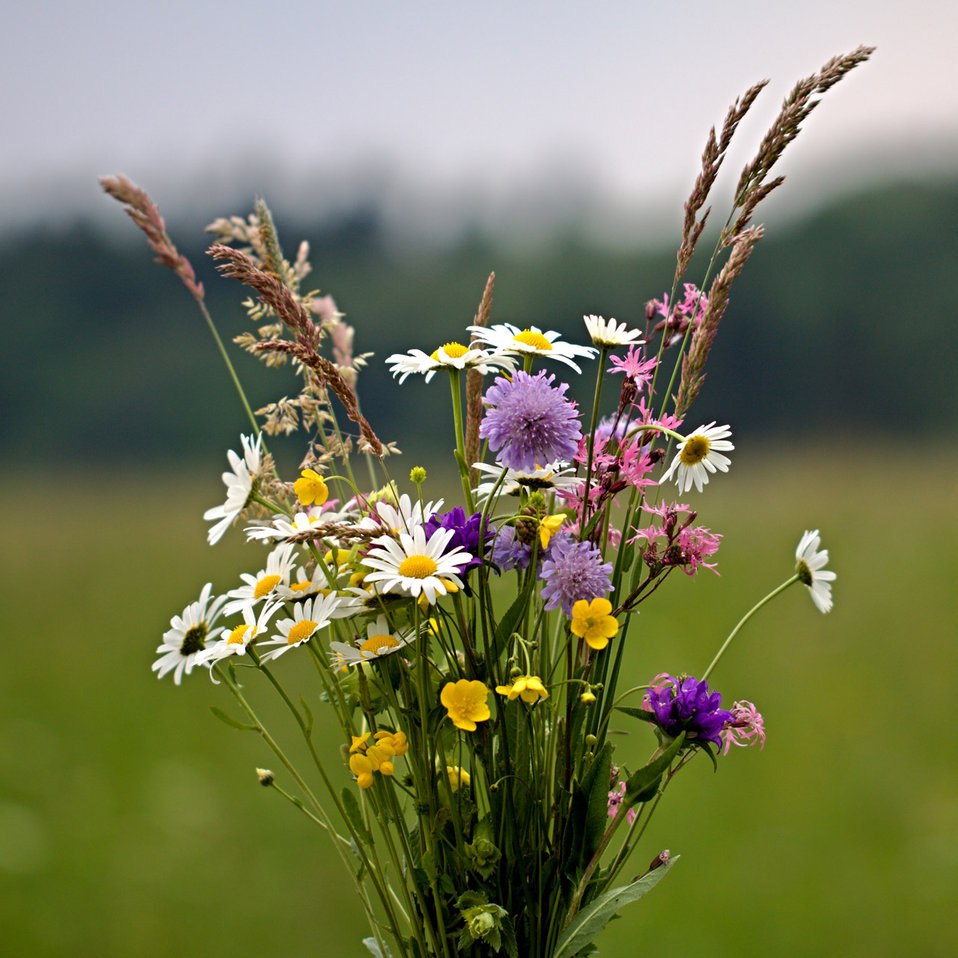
Bouquet of spring roses 1

Natural roses are always beautifull.